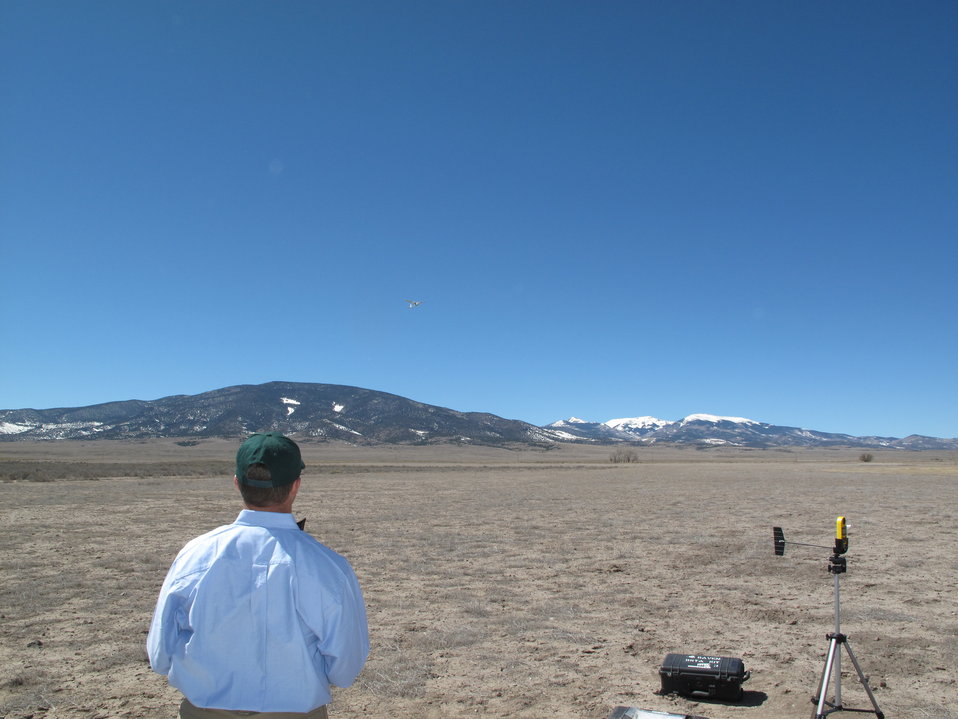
Flying the Friendly Skies

The U.S. Geological Survey, U.S. Fish & Wildlife Service and Bureau of Land Management conducted a demonstration of Unmanned Aircraft Systems (UAS) as a means of surveying migratory birds March 22, 2012. The goal of the feasibility study was to test the UAS technology as a means of surveying migratory Sandhill Cranes roosting on the Monte Vista Wildlife Refuge in the San Luis Valley of Colorado.